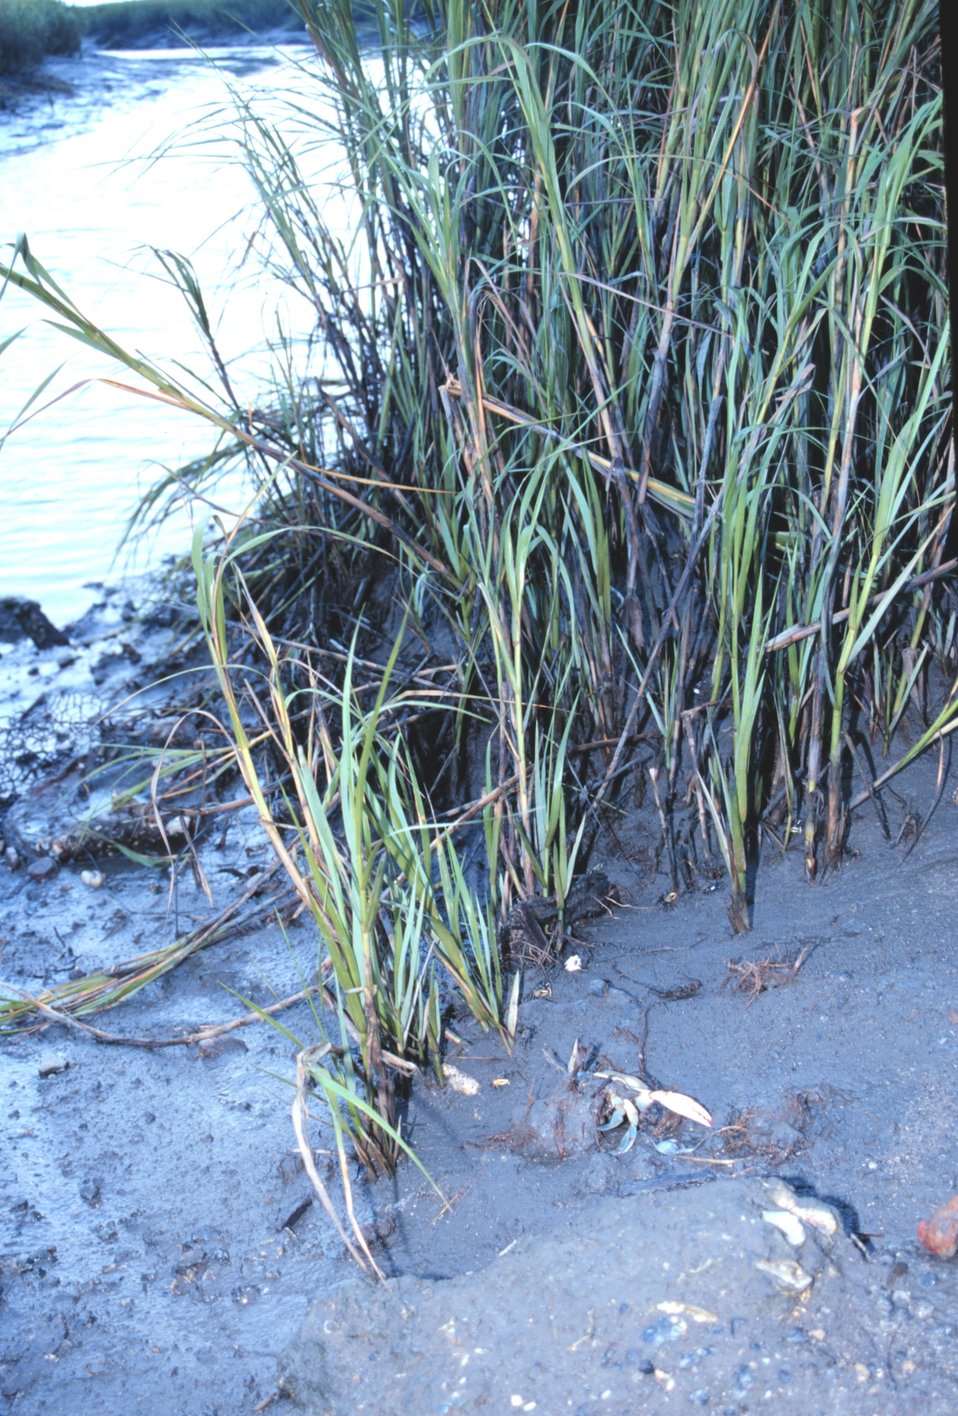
Life on the mudflats and in the marsh grass of Helena Island